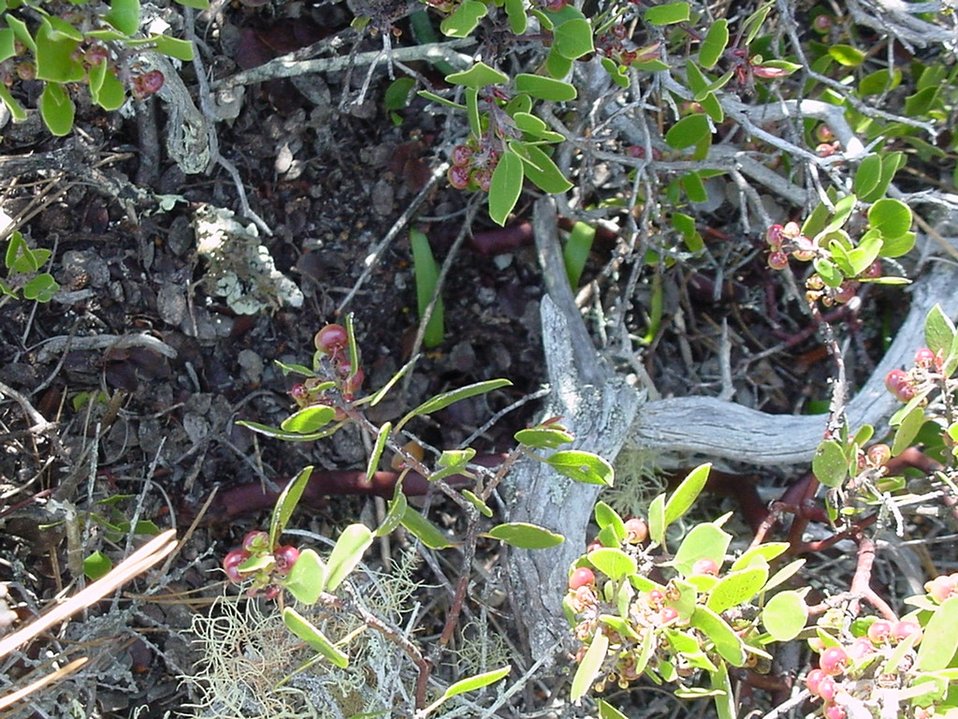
Yadon's piperia in maritime chaparral (USFWS)